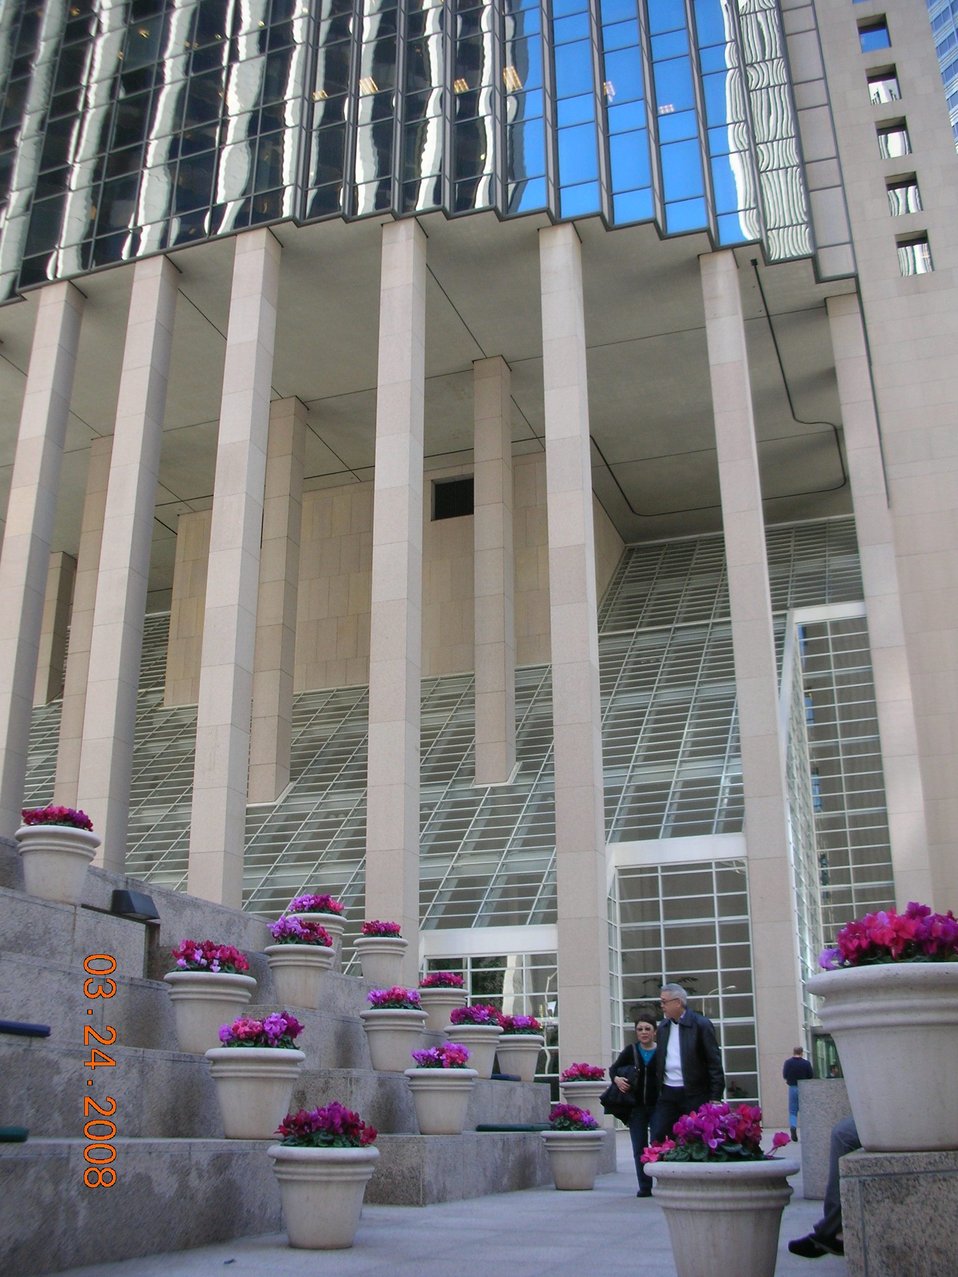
The plaza and garden of 101 California Street, San Francisco